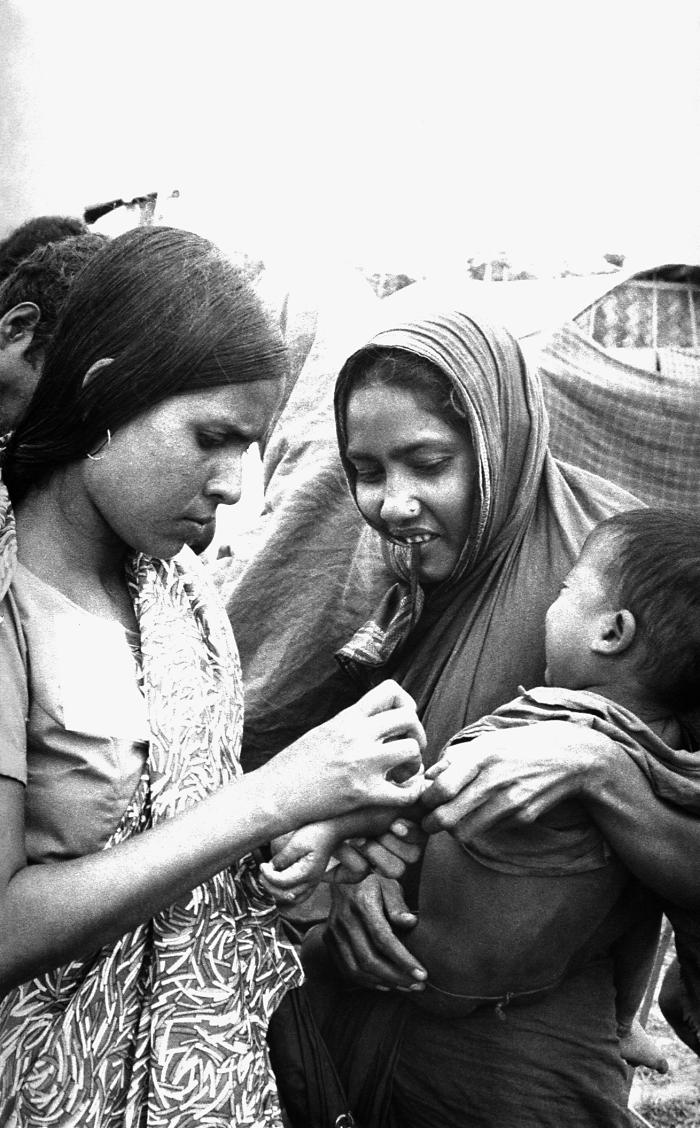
This 1975 photograph depicted this volunteer smallpox eradication team vaccinator while in the process of vaccinating a young woman's child as they stood outside a makeshift tent in a bastee, which was an impoverished environment. Normally, individuals should not get the smallpox vaccine if they are younger than 12 months of age. However, the mantra preached by the eradication team members was 'that there was only one type of person who did not need a vaccination - a dead person'. During non-emergency smallpox scenarios, the Advisory Committee on Immunization Practices (ACIP) advises against non-emergency use of smallpox vaccine in children younger than 18 years of age.